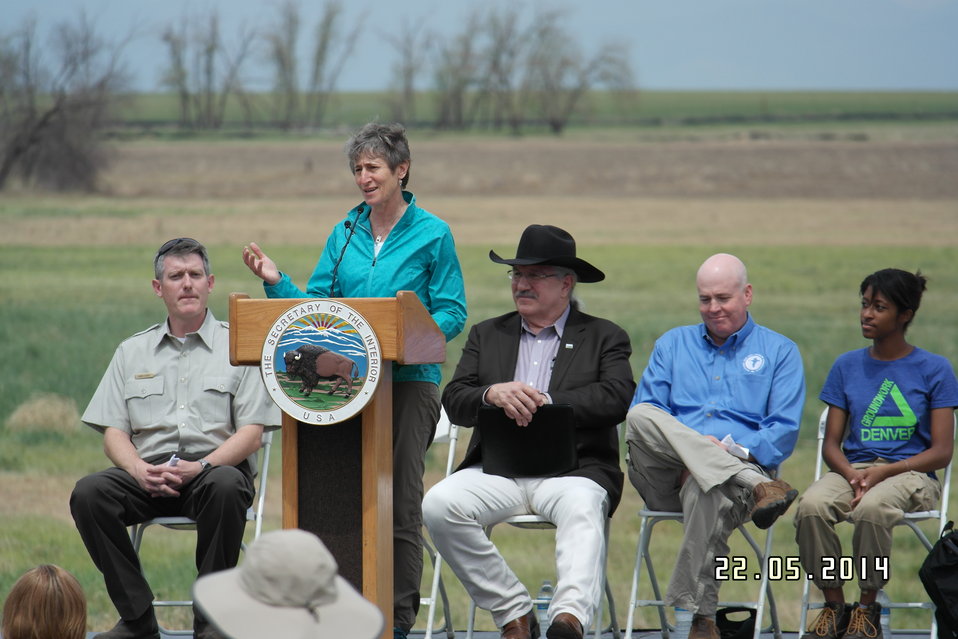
Secretary Jewell Announces $6.7 for Youth Conservation Jobs

Jewell made the announcement at an event at Rocky Mountain Arsenal National Wildlife Refuge outside Denver, Colorado, where she was joined by U.S. Department of Agriculture (USDA) Deputy Under Secretary for Natural Resources and the Environment Arthur “Butch” Blazer; Greg Knadle, Vice President for Government Relations of the National Fish and Wildlife Foundation (NFWF); Refuge Manager David Lucas and youth corps members of Groundwork Denver.